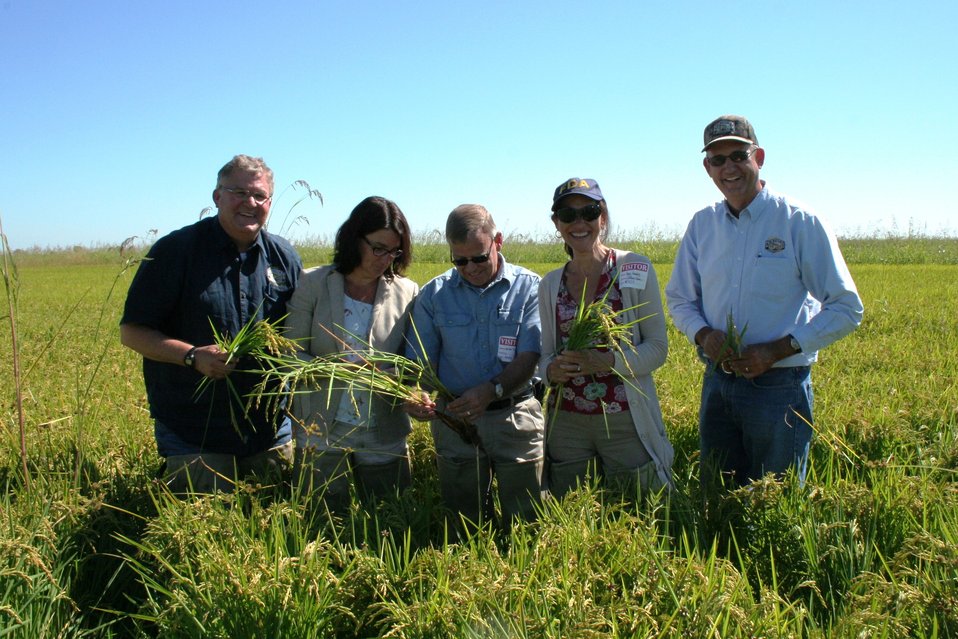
FDA's Rice Tour: Looking for Insights on Arsenic (0868)

FDA Commissioner Margaret A. Hamburg and colleagues visited research facilities and rice farms in California on Sept. 4-5, 2013 in an effort to gain a greater understanding of the presence of arsenic in rice. At the Lundberg Family Farms in Richvale, Calif., from left, are Bryce Lundberg, Laura Batcha of the Organic Trade Association, FDA Deputy Commissioner for Foods and Veterinary Medicine Michael Taylor, Hamburg, and Eric Lundberg. For more information, read the FDA Voice blog:

• On Farms and in Labs, FDA and Partners Are Working to Get Answers on Arsenic in Rice